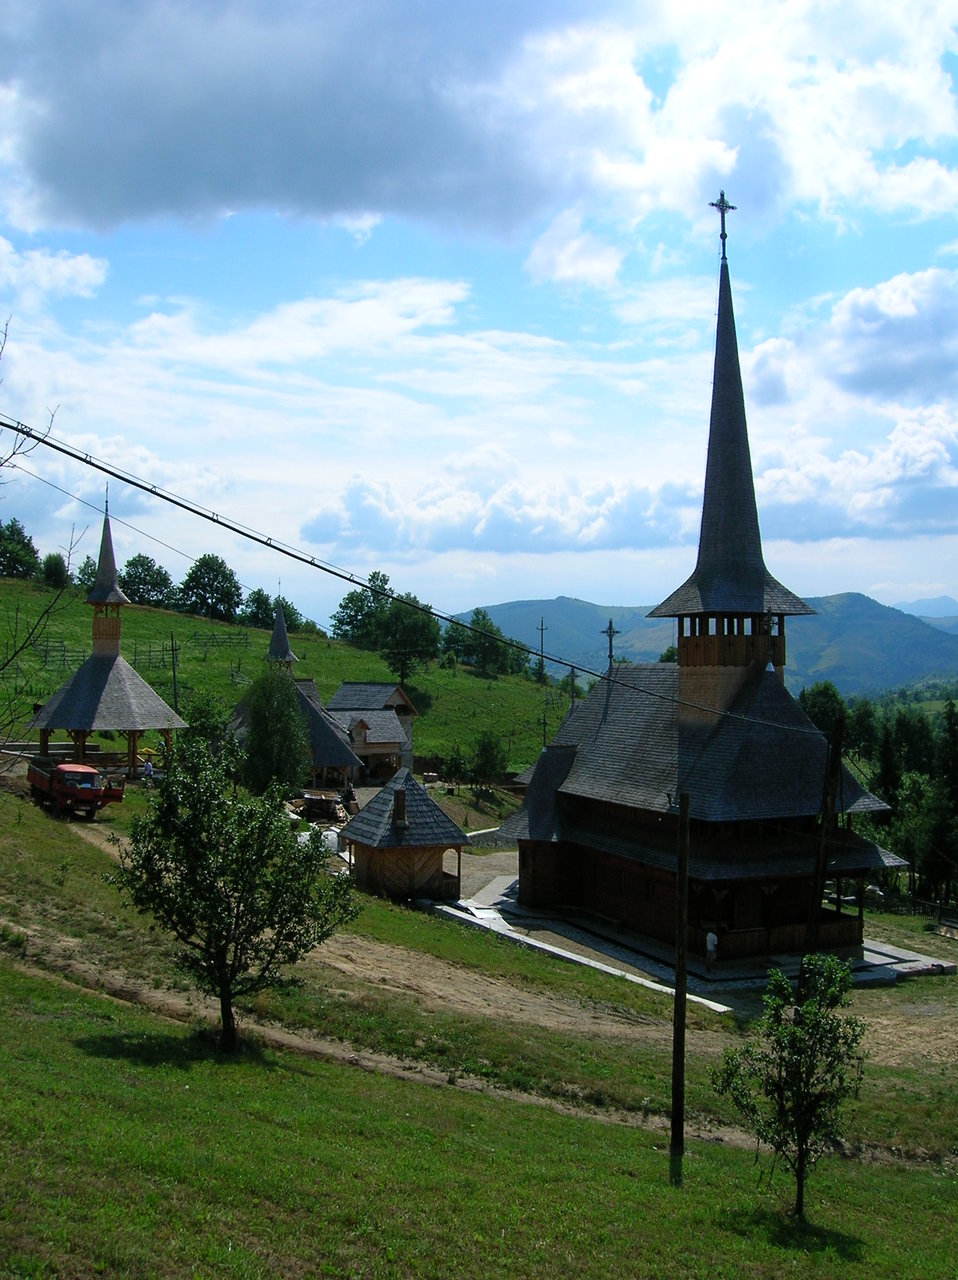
Deutsch: Das sich noch immer in Bau befindliche Kloster in Botiza (Maramuresch, Rom√§nien). Contemporary monastery being buildt in Botiza (Maramure≈ü, Romania). Fran√ßais†: Monast√®re contemporain en train d'√™tre construit √† Botiza (Maramure≈ü, Romania).